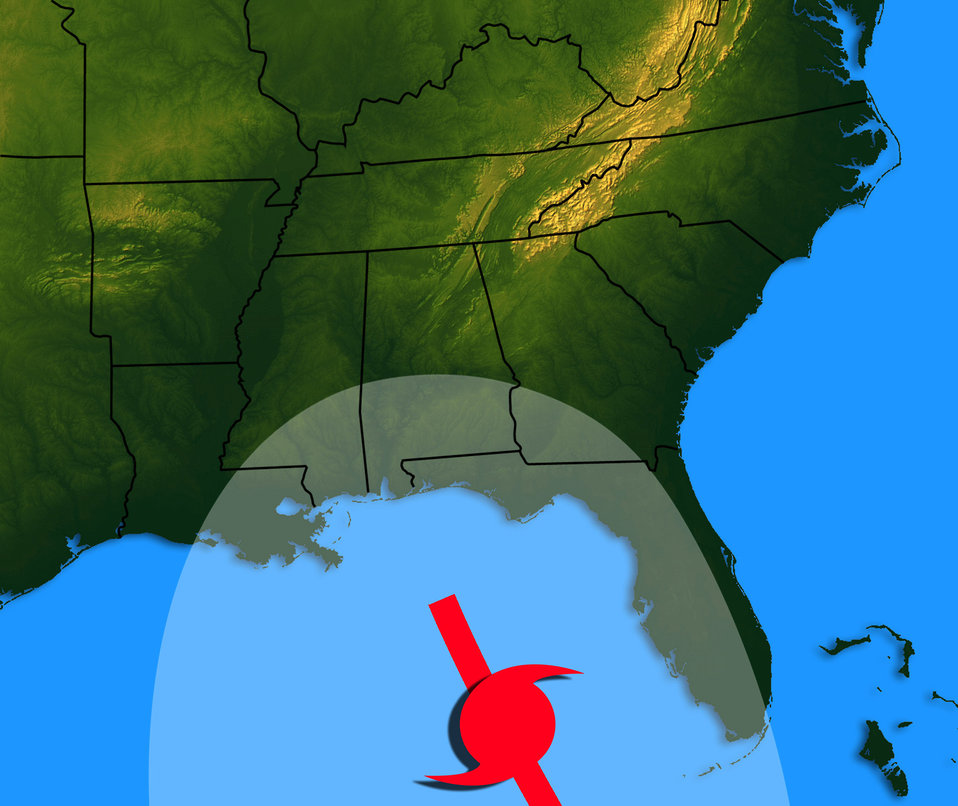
Base people, aircraft move from Hurricane Ivan's path

SAN ANTONIO -- National Hurricane Center officials expect Hurricane Ivan to reach the Gulf Coast on Sept. 16.